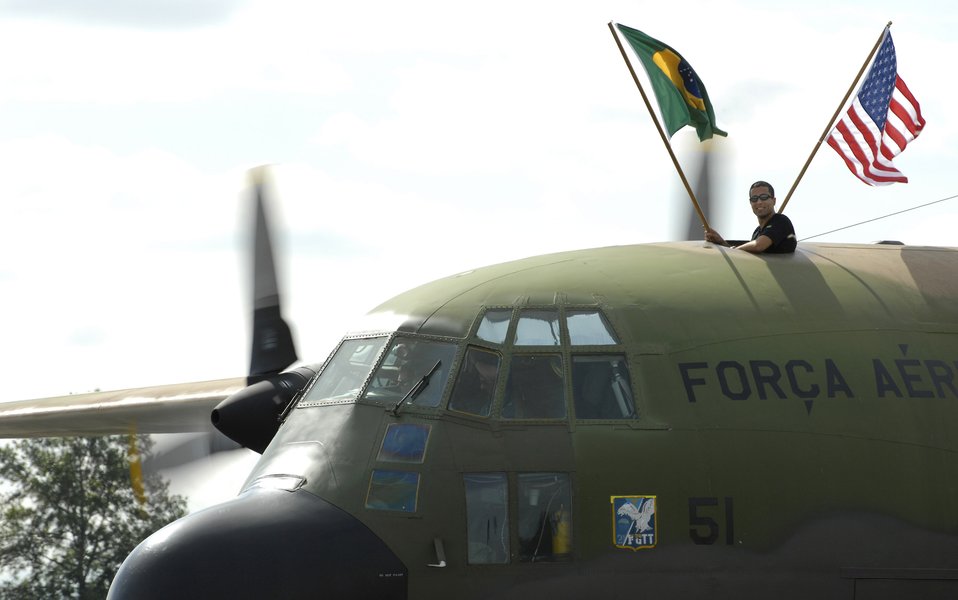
Rodeo 2007

A Brazilian Air Force member shows off his country's flag while their C-130 aircraft taxis down the flightline at McChord Air Force Base, Wash., July 16 for the Air Mobility Rodeo 2007. Rodeo is a readiness competition of U.S. and international mobility forces that focuses on improving war fighting capabilities and support of the war on terrorism.